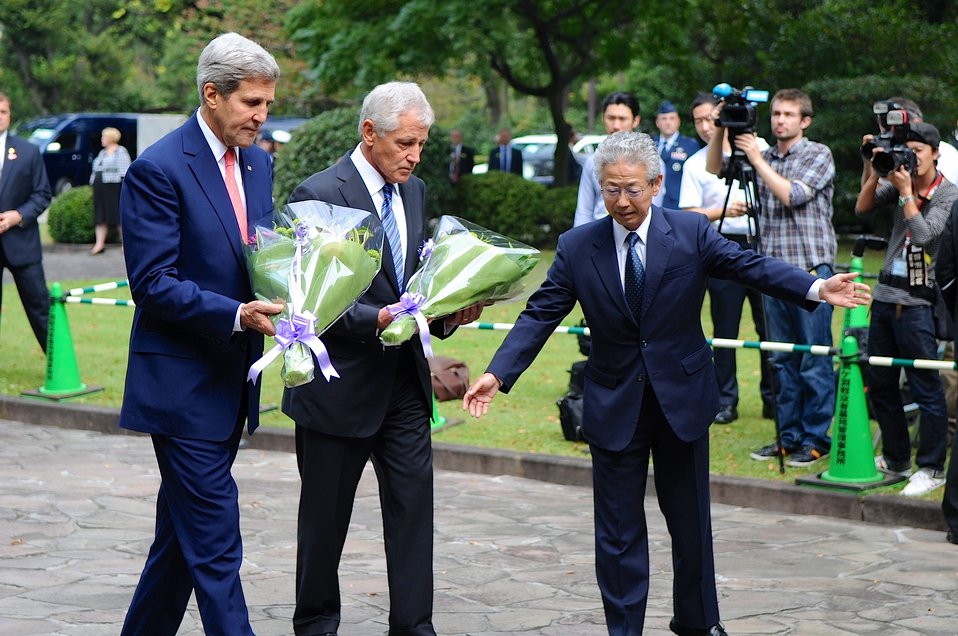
Secretary of State Kerry and Defense Secretary Hagel at at the Chidorigafuchi National Cemetery in Tokyo

U.S. Secretary of State John Kerry and U.S. Defense Secretary Chuck Hagel prepare to lay wreaths at the Chidorigafuchi National Cemetery in Tokyo before meeting with their Japanese counterparts on October 3, 2013.